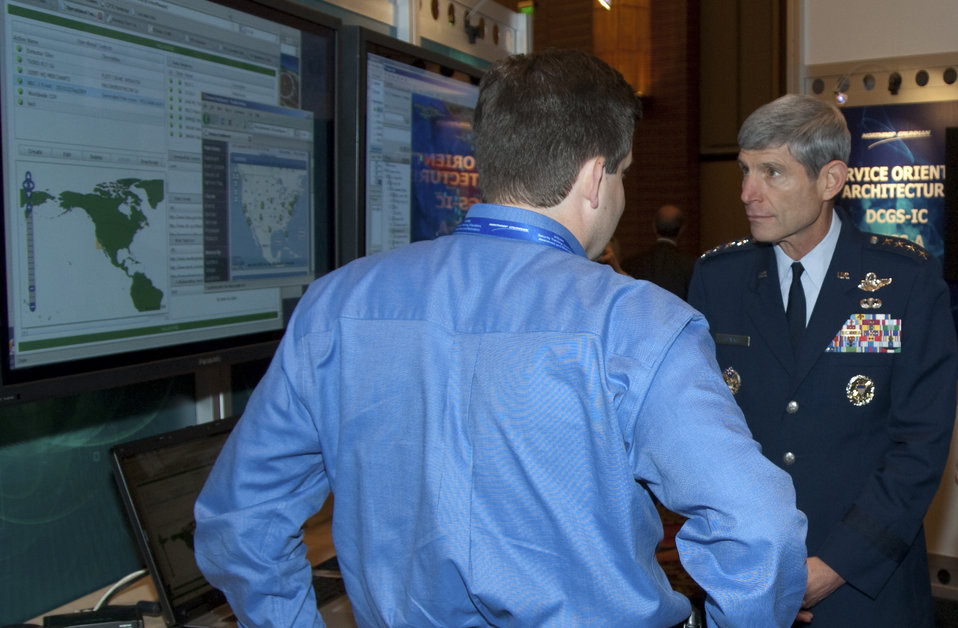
C2ISR Symposium

Air Force Chief of Staff Gen. Norton Schwartz reviews one of the many technology displays at the Air Force Command, Control, Intelligence, Surveillance and Reconnaissance Symposium Sept. 30, 2009, at a conference center in Ledyard, Conn. The general also addressed symposium attendees, telling them that technology and doctrine must move in lockstep.